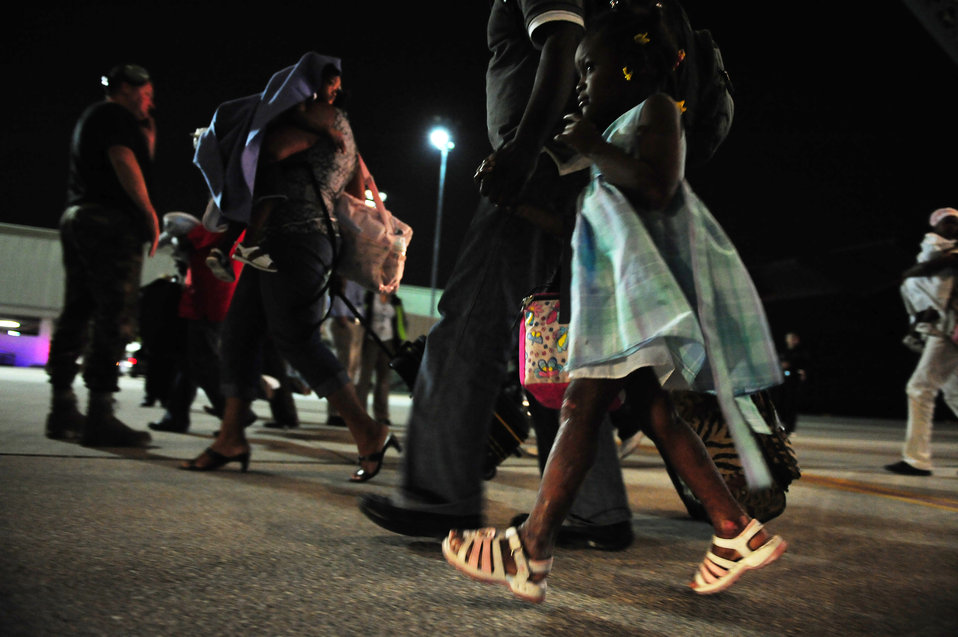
Haiti Earthquake Relief

Haitian-American evacuees exit a C-17 Globemaster III Jan. 18, 2010, at Orlando Sanford International Airport, Fla. The C-17 crew is assigned to the 729th Airlift Squadron at March Air Reserve Base, Calif. The aircraft is from the 452nd Air Mobility Wing at March ARB.